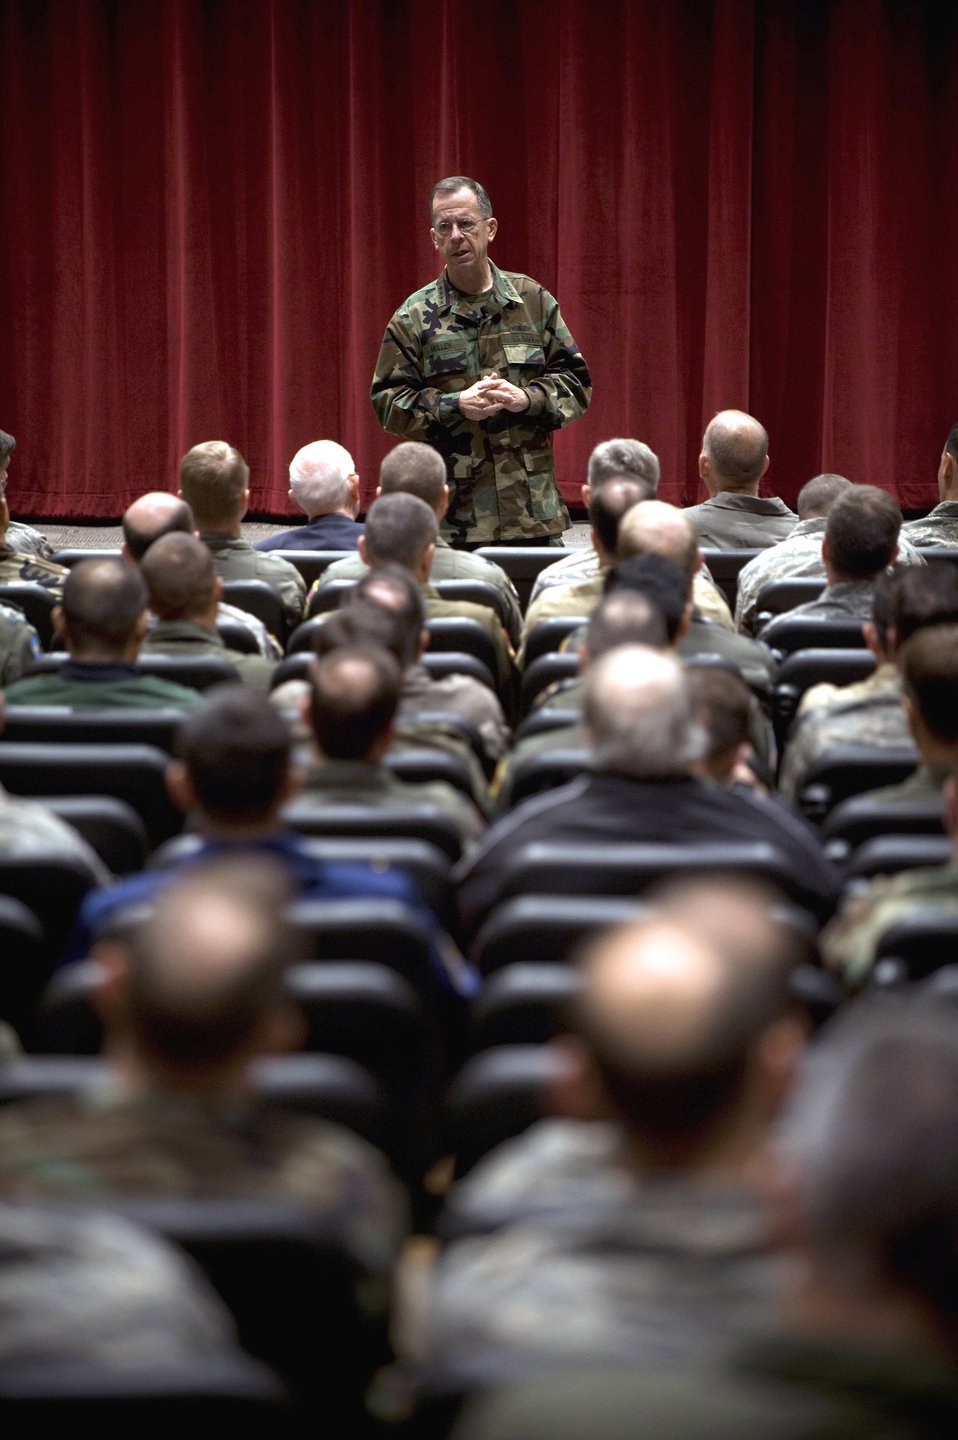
Joint Chiefs chairman highlights keys to defense

Navy Adm. Michael G. Mullen addresses students assigned to the Air War College Oct. 28 at Maxwell Air Force Base, Ala. Admiral Mullen is the chairman of the Joint Chiefs of Staff.